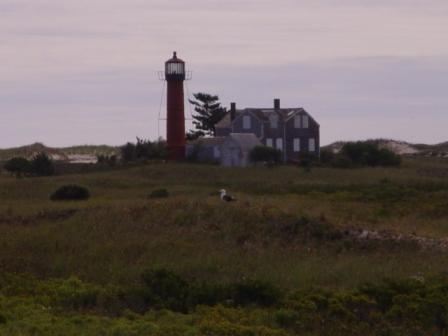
Lighthouse

Monomoy National Wildlife Refuge, MA.